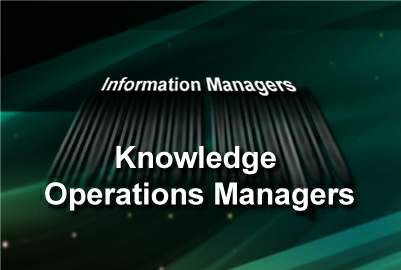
Information managers transform into knowledge operations managers

Airmen in the former information management career field started a two-part transformation Oct. 31, 2008, as they changed their job titles to knowledge operations managers
and will undergo another transformation in October 2009 when they migrate into the cyberspace workforce and takes on a new Air Force specialty code, 3D0X1.